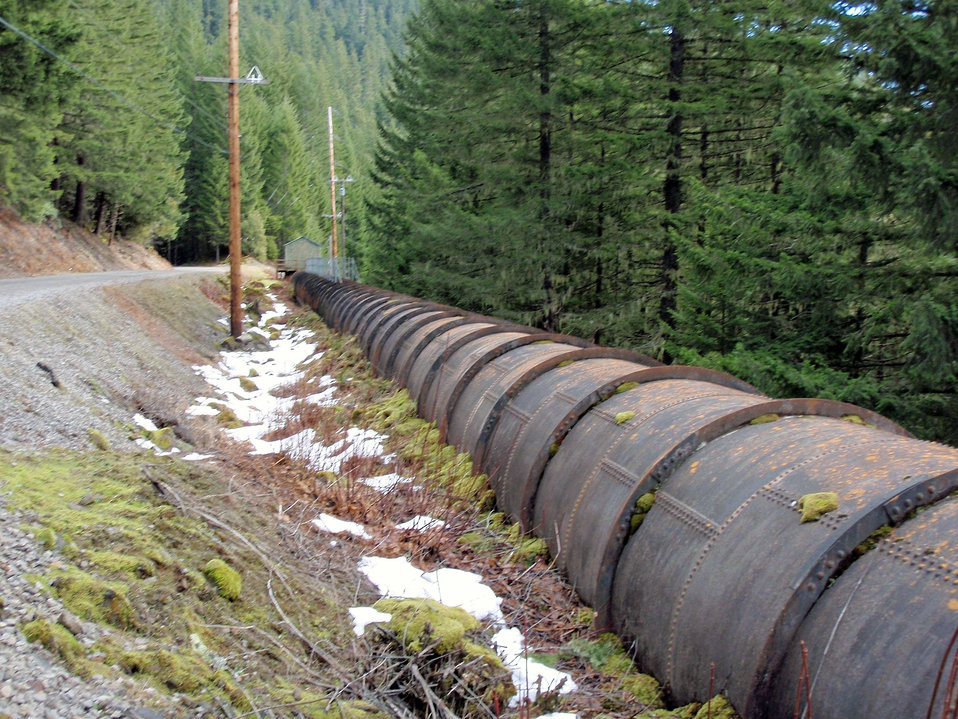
Oak Grove Fork Fish Return Pipeline

This pipe used to divert all of the water from the Oak Grove Fork of the Clackamas River in Oregon on Feb. 8, 2013. The 70 to 100 cubic feet per second of new flow will greatly expand habitat for threatened fish, especially coho salmon and steelhead. U.S Forest Service photo.